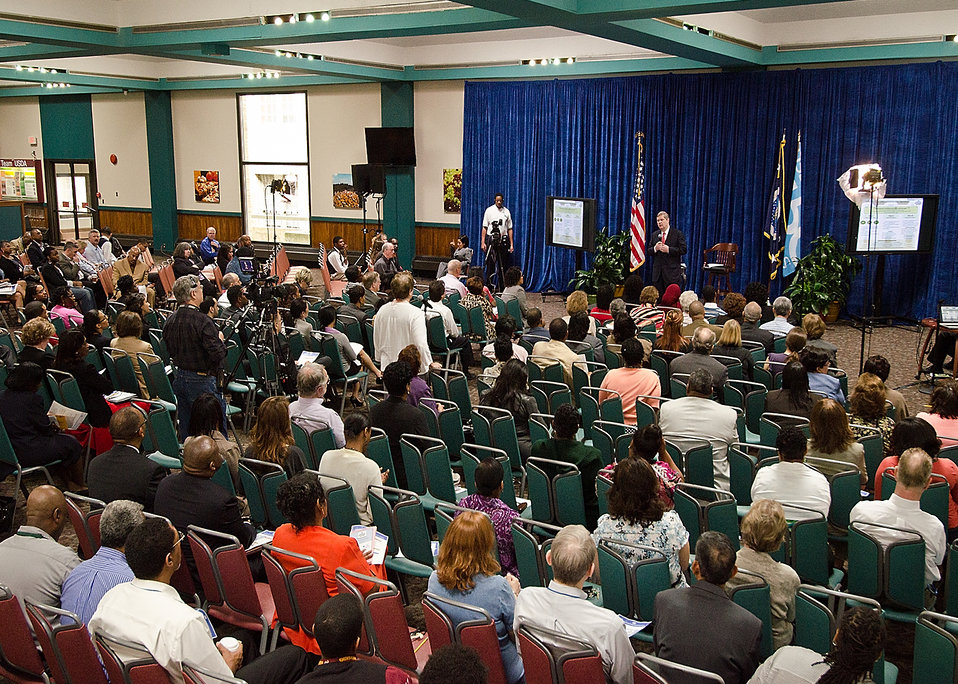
Agriculture Secretary Tom Vilsack offered U. S. Department of Agriculture (USDA) employees the opportunity to ask questions about the Blueprint for Stronger Service Initiative and hear directly from the Secretary Vilsack during the Ask The Secretary event held in the South Building Cafeteria, in Washington, D.C., on Wednesday, March 21, 2012, The Blueprint for Stronger Service Initiative aims to build a modern and efficient service organization that is closely timed with technological innovations - and better suited to respond to 21st century agricultural challenges.